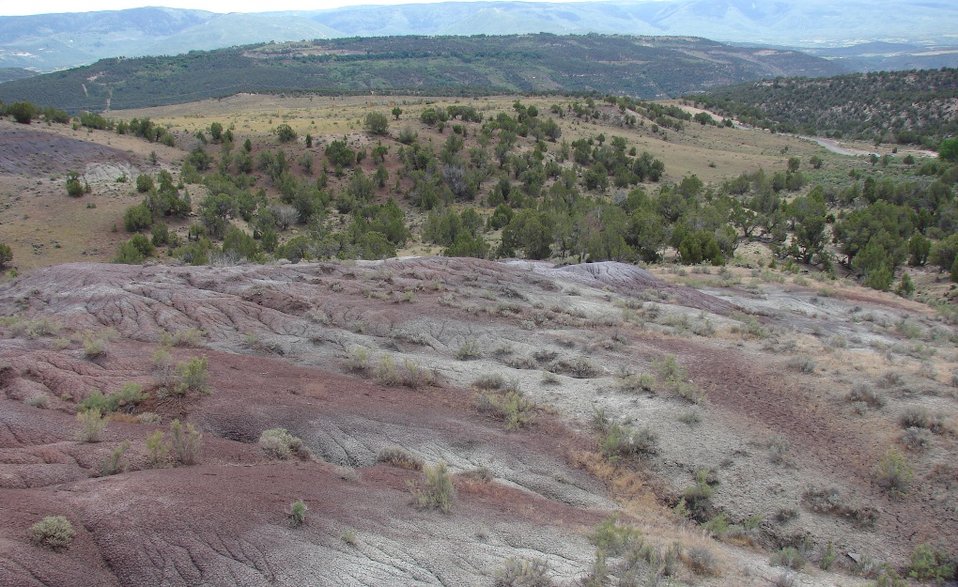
DeBeque Phacelia Habitat

DeBeque phacelia grow on these colorful soils near DeBeque, Colorado.

Photo credit: USFWS

...........................................................................

BACKGROUND:

DeBeque phacelia (Phacelia submutica)

DeBeque phacelia is a very small, low-growing plant with cream colored flowers and dark-green to purplish leaves. This member of the waterleaf family (Hydrophyllaceae) is an annual, emerging in early April and completing its one-year life cycle by mid-June. The plant is only found in a twelve-mile radius around the town of DeBeque, in Mesa and Garfield Counties, Colorado and is restricted to colorful exposures of chocolate to gray shades of alkaline clay soils within the Wasatch geologic formation. On these island-like barren exposures, it grows in small patches with few individuals. Individuals are known from 9 separate populations and numbers dramatically fluctuate from year-to-year, depending on climatic conditions.

DeBeque phacelia was first discovered in 1911 by naturalist George E. Osterhout, but extensive survey efforts to map the range of the species were not made until the 1980’s. Because of DeBeque phacelia’s limited range, small population size, and numerous threats to the species, it was proposed for listing as threatened under the Endangered Species Act in 2010 with a final listing expected in 2011. Threats to the species today include: oil and gas development, off-road vehicle traffic, heavy livestock use, proposed water projects, and potential effects from climate change.

To help manage and conserve DeBeque phacelia, research is underway to study the effects of dispersed development from oil and gas, off road vehicles, and grazing on the species. Another research project underway looks at the species’ reproductive strategy and collects information about its seed bank. In addition, this research is working to develop a method to survey for DeBeque phacelia year-round, using the seeds in the soil. Together, these projects will help land managers find ways to balance development with species conservation.

Eighty-seven percent of DeBeque phacelia populations are on public lands managed by the Bureau of Land Management and the U.S. Forest Service. The remaining twelve percent are on private lands. The Endangered Species Act does not protect plants on private lands and therefore, all conservation actions on private land are voluntary. Funding is available to landowners wanting to conserve the species. Please contact Gina Glenne or Ellen Mayo at 970-243-2778 for further information on this species and ways that you can help with conservation and recovery.